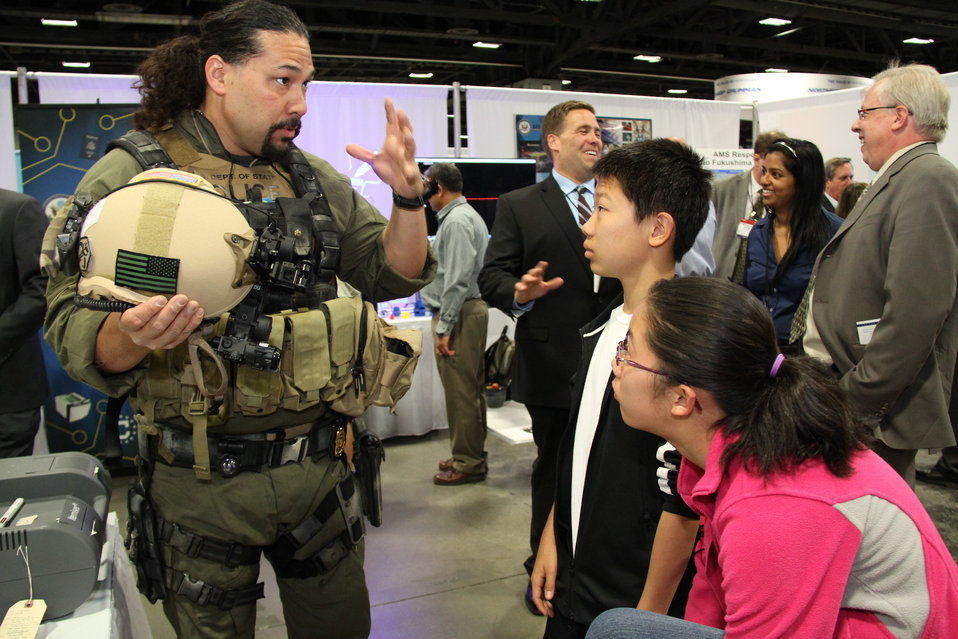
Diplomatic Security Special Agent Talks to Youth at the USA Science and Engineering Festival

A Diplomatic Security special agent talks to young visitors at the Department of State exhibit at the USA Science and Engineering Festival in Washington, DC on April 25, 2014.